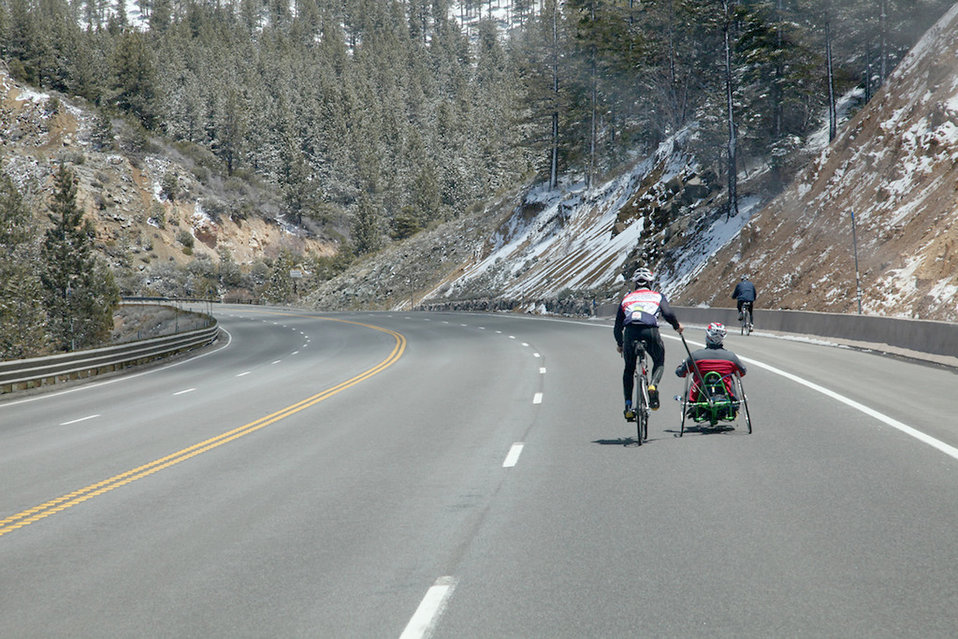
Wounded warrior Sea to Shining Sea

Staff Sgt. Marc Esposito assists a teammate going through the Sierra Nevadas. Sergeant Esposito is participating in Sea to Shining Sea, a 4,000-mile bike ride which started at the Golden Gate Bridge and will end July 24, 2010, in Virginia Beach, Va. The goal of the ride is to honor the courage of our service men and women, recognize the strength of the American spirit and challenge perceptions of how we view athletes. Sergeant Esposito is from the 21st Special Tactics Squadron at Pope Air Force Base, N.C.